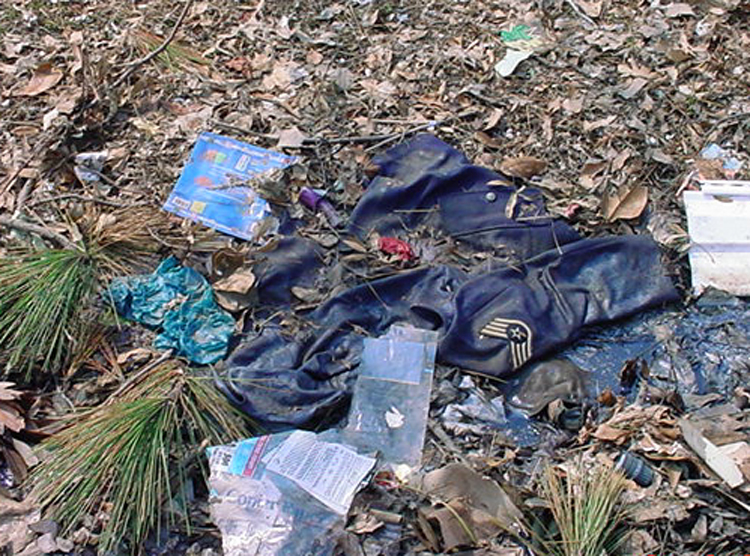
Airman attempts to rebuild life after Hurricane Katrina

The enlisted uniforms of 1st Lt. Dawn Clifton lie in mud and trash in front of the Cliftons' home in Ocean Springs, Miss., after Hurricane Katrina. Lieutenant Clifton, who is prior enlisted, was stationed at Keesler Air Force Base, Miss., when the hurricane devastated the Gulf Coast in August 2005.